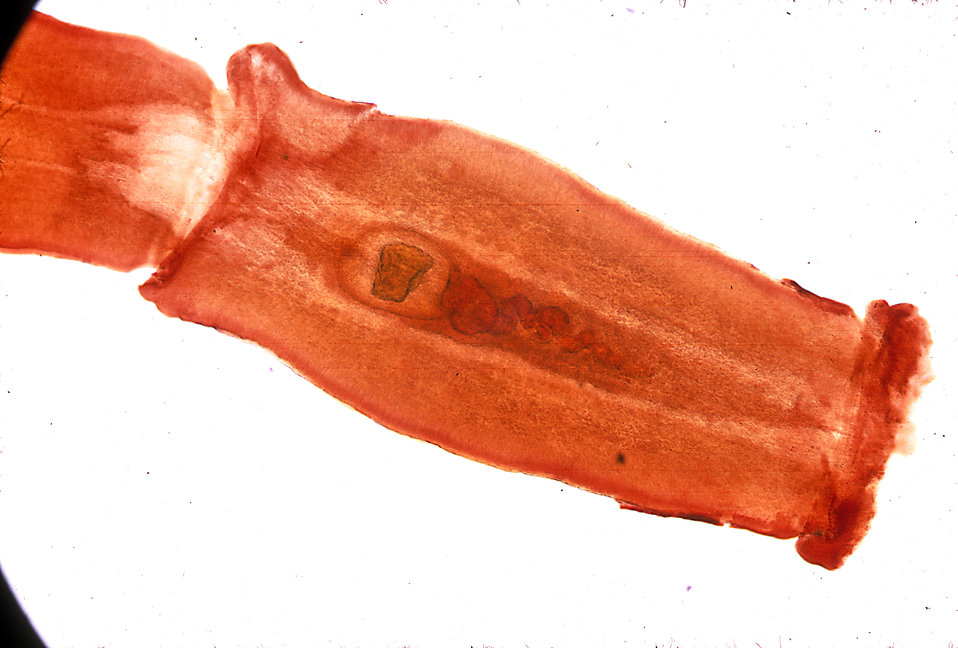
This is a mature proglottid from the tapeworm, Mesocestoides variabilis, taken from an 18 month old child.